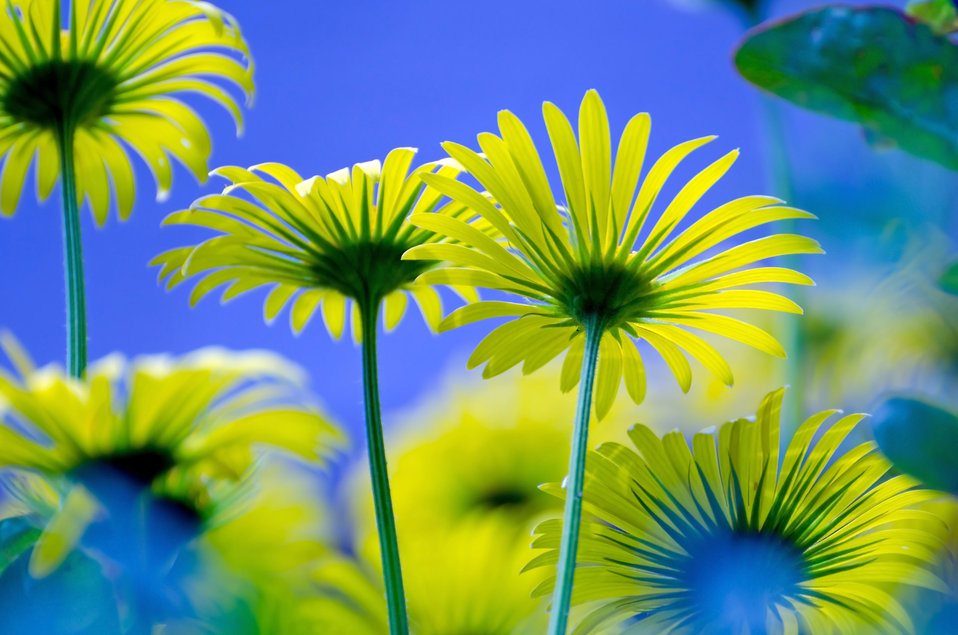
Flowers

Yellow flowers.